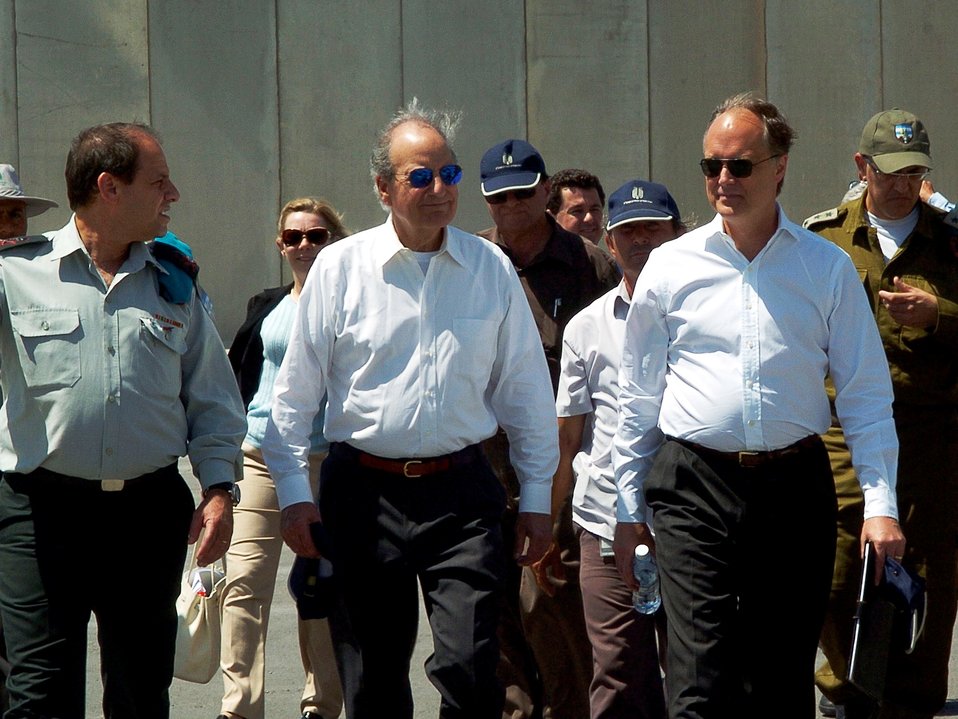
Special Envoy Mitchell and Ambassador Cunningham Visit the Kerem Shalom Crossing

U.S. Special Envoy for Middle East Peace George Mitchell and U.S. Ambassador to Israel James Cunningham visit the Kerem Shalom crossing on the border of the Gaza Strip on June 30, 2010.